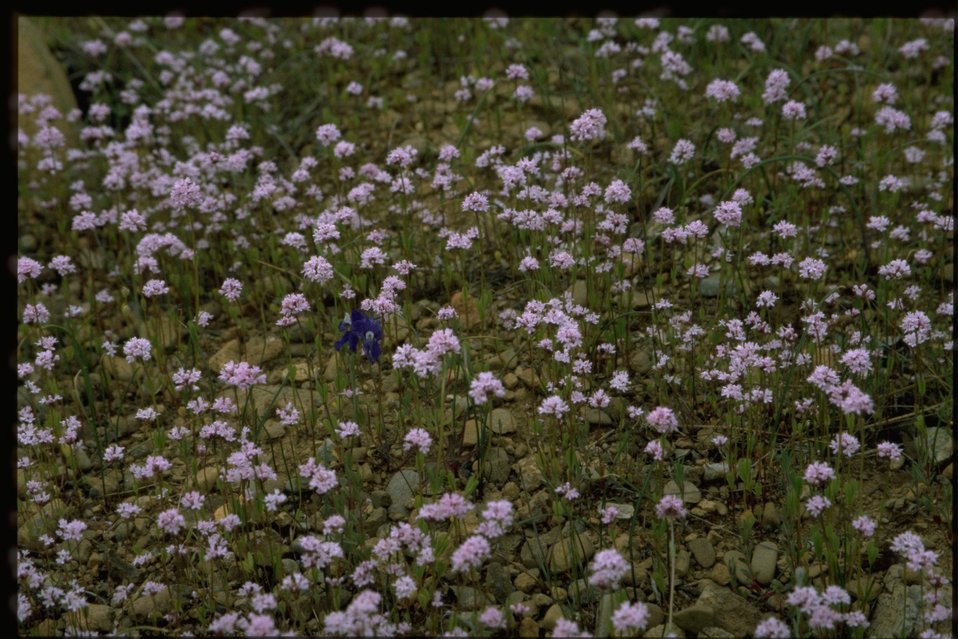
Farshot of Plectritis wildflowers.